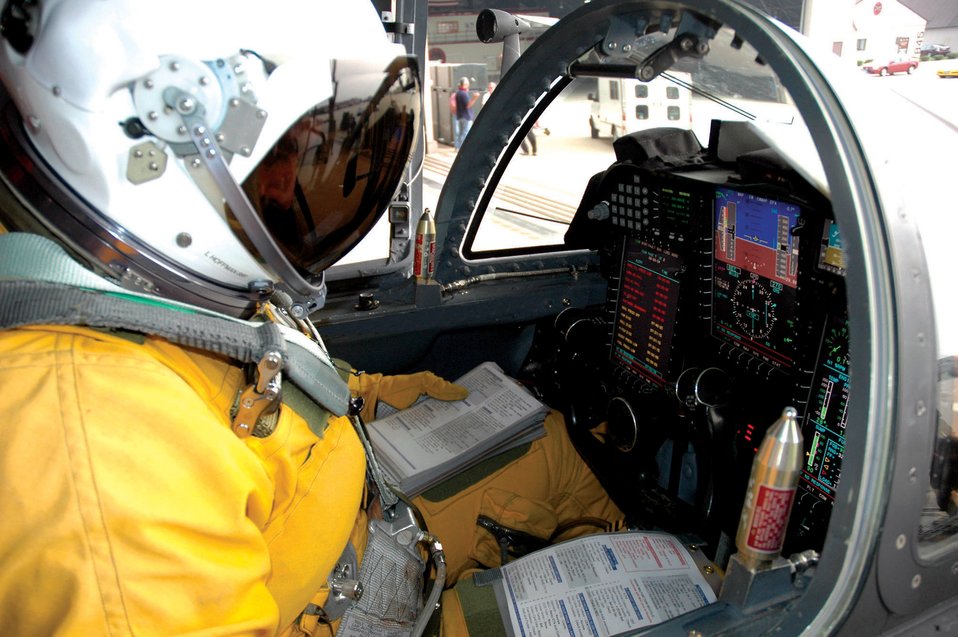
U-2s boast new, improved cockpit

Lt. Col. Lars Hoffman reviews his checklist before flying the new U-2S Dragon Lady, Block 20, aircraft on its first flight from Osan Air Base, South Korea, on Tuesday, June 20. Colonel Hoffman is the 5th Reconnaissance Squadron commander.